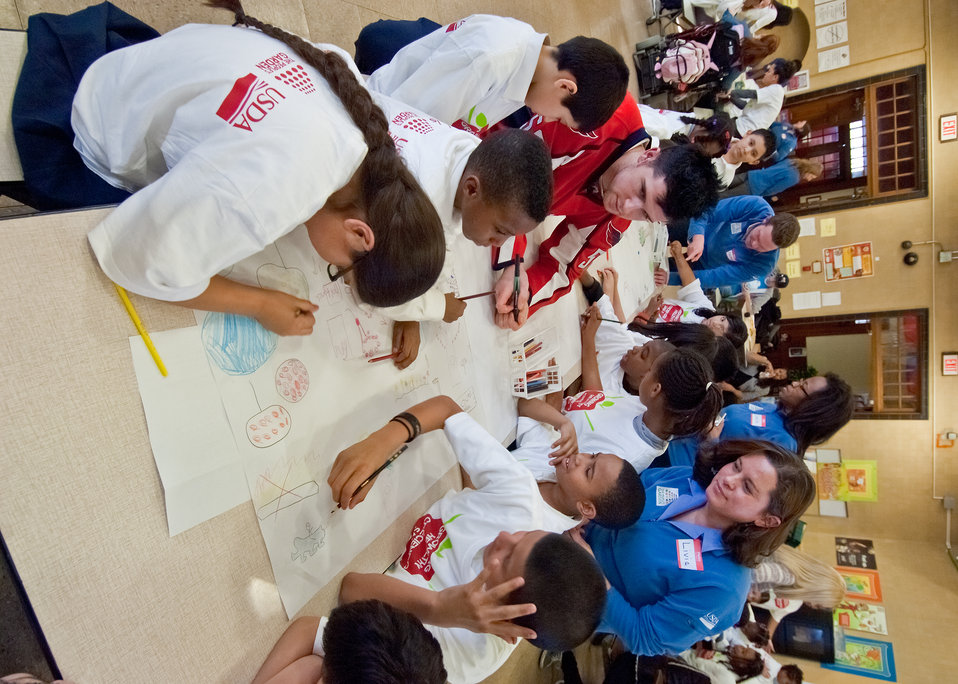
Mike Green, Washington Capitals and 2011 NHL All-Star defenseman (left), Livia Marques (right), Director, United States Department of Agriculture, The People’s Garden, Leslie Burks (right, rear), Project Manager, United States Department of Agriculture, The People’s Garden and Matt Arnn (left, rear), United States Department of Agriculture, Landscape Architect review the garden plans of students from Shauna Myers and Joel Lowenath’s Third Grade class at Powell Elementary School in Washington, D.C., Thursday, February 10, 2011. Powell Elementary students designed their own “People’s Garden” with Green, teachers, parents, United States Department of Agriculture Landscape Architects and United States Department of Agriculture, The People’s Garden employees and volunteers. In early March the students will reveal the design of their garden and at the end of the month they will build the garden. The Washington Capitals adopted Powell Elementary as part of the team’s community outreach efforts. Marques mentioned, “The benefits provided by People’s Gardens in this and hundreds of other communities goes far beyond the food that is produced, the simple act of planting a garden can make real and lasting change in our communities, especially those in greatest need. The aim of the People’s Garden initiative is to grow healthy food, people and communities throughout the country.”